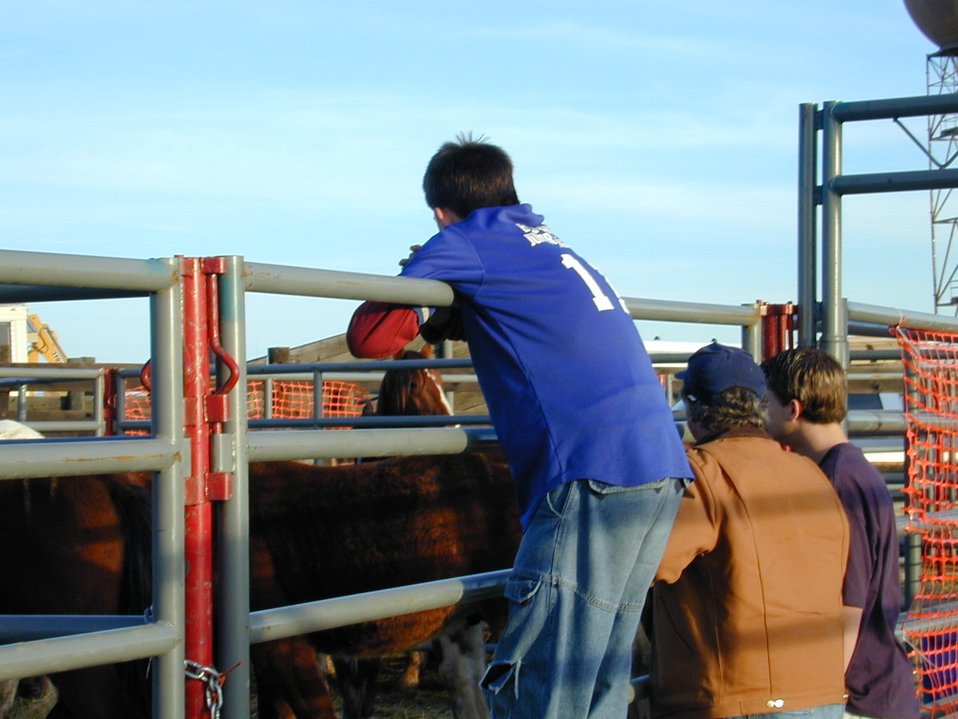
Wild Horse and Burro Adoption